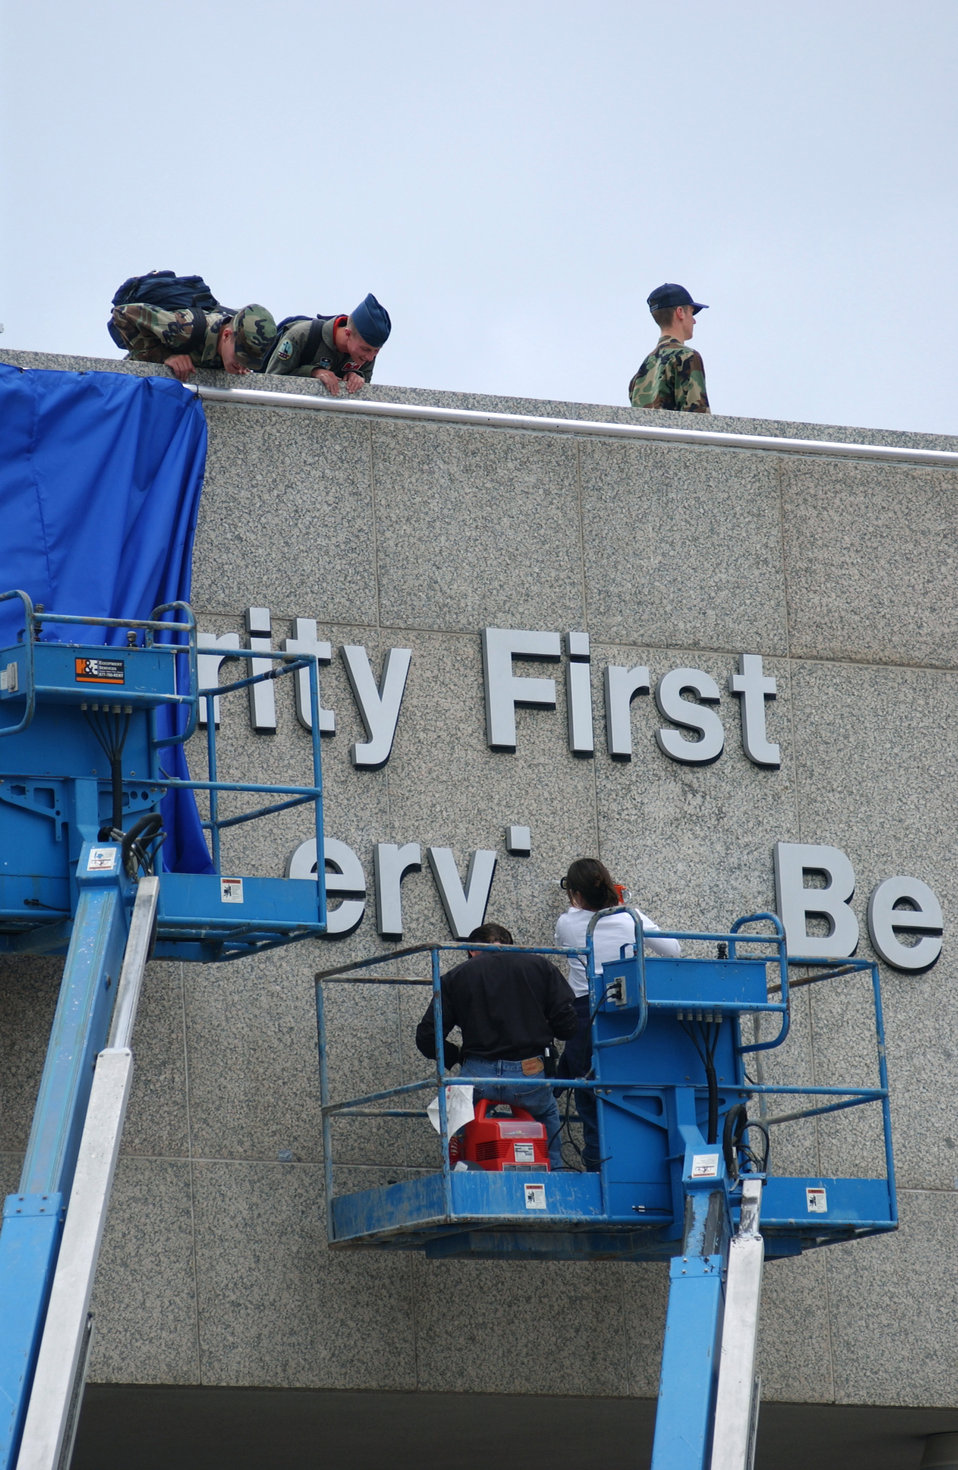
Values added

U.S. AIR FORCE ACADEMY, Colo. -- Curious Air Force Academy cadets peer over a granite wall to watch contractors attach the Air Force core values to the ramp of the academy's terrazzo. Air Force leaders decided in 2003 that the poetic reference "Bring me men ..." was out of step with the current Air Force culture and offensive to many people. The core values are: integrity first, service before self and excellence in all we do. The base of the ramp is where new cadets take their first steps into the academy.